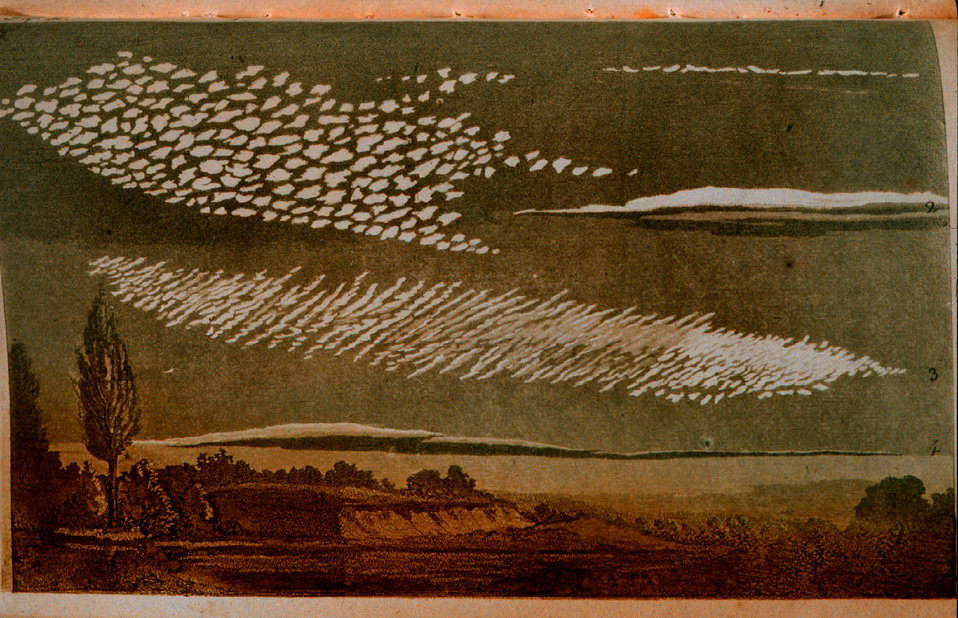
Selections from a German cloud atlas In: 'Wolken und andere Erscheinungen....', Thomas Forster, 1819 Figure 3